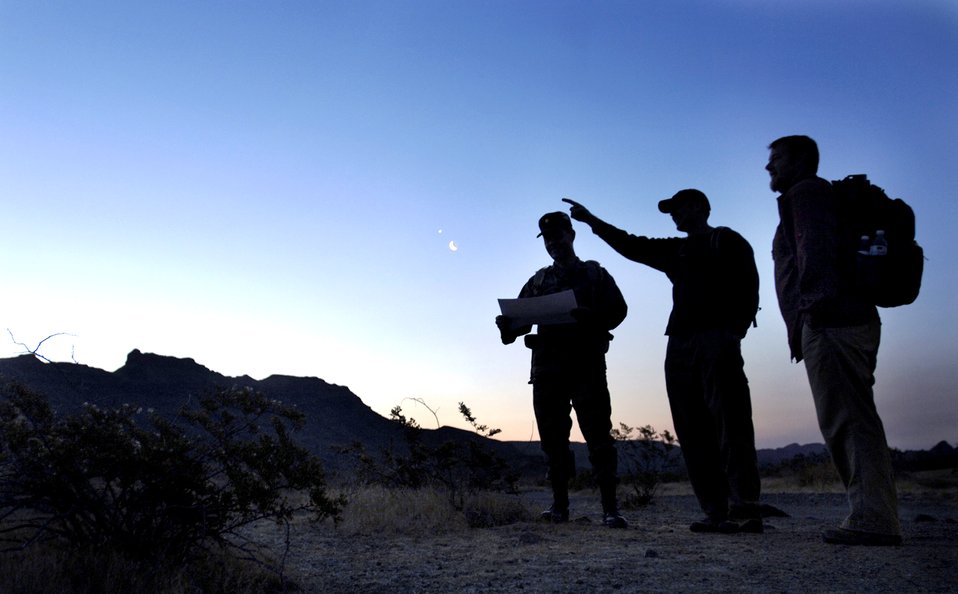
Pronghorn clearance

J.T. Hesse shows Maj. Daniel Garcia and Erik Stenehjem where pronghorn antelope were found on the Barry M. Goldwater Range in Phoenix, Ariz., April 24, 2006. The men were conducting a routine pronghorn clearance. Once no sign of the antelope is found, mission bombings and strafing can continue on the range.